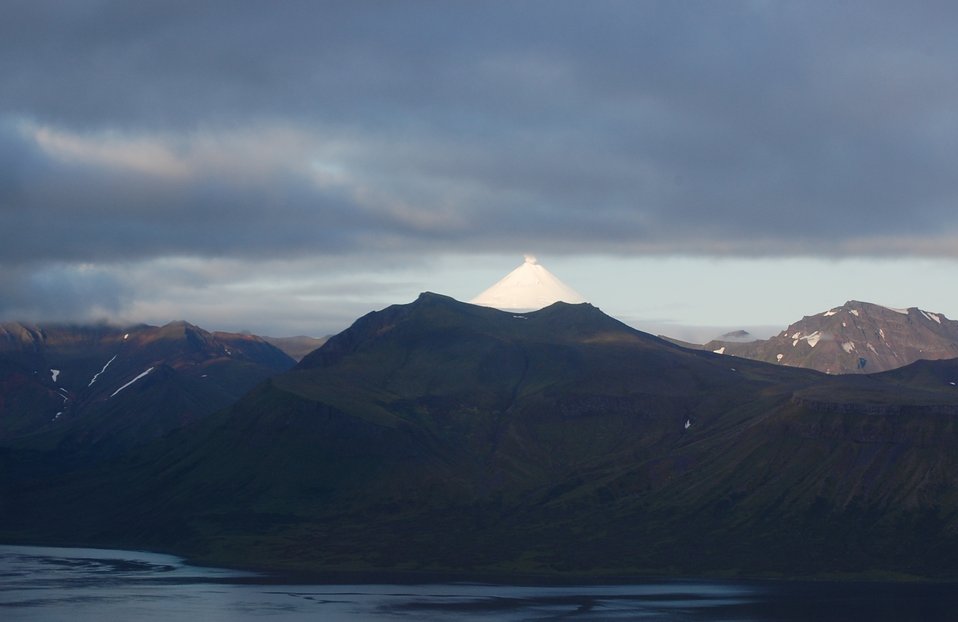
Shishaldin from Bechevin Bay

Unimak Island, Alaska Maritime National Wildlife Refuge